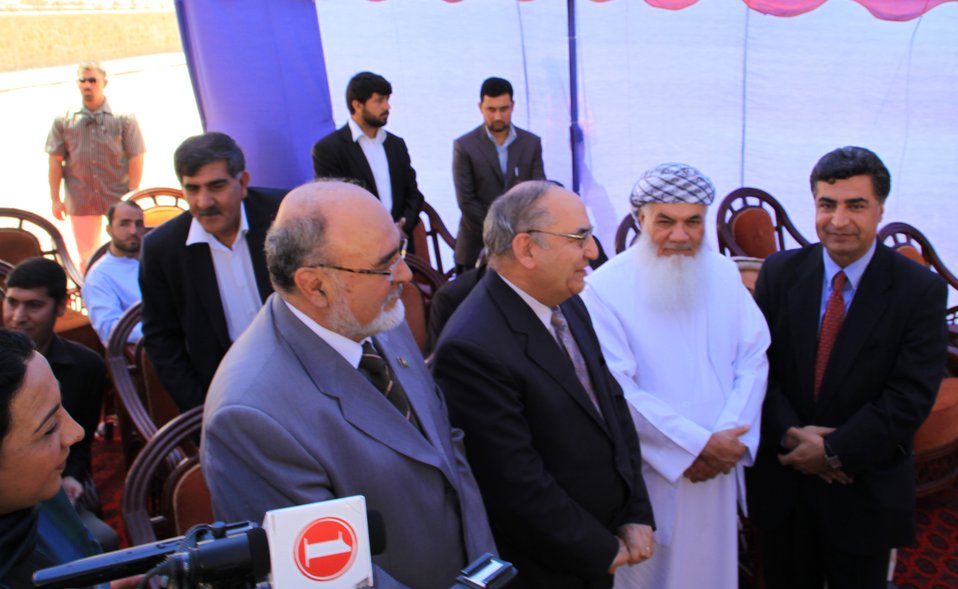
105 MW Tarakhil Power Plant Handover